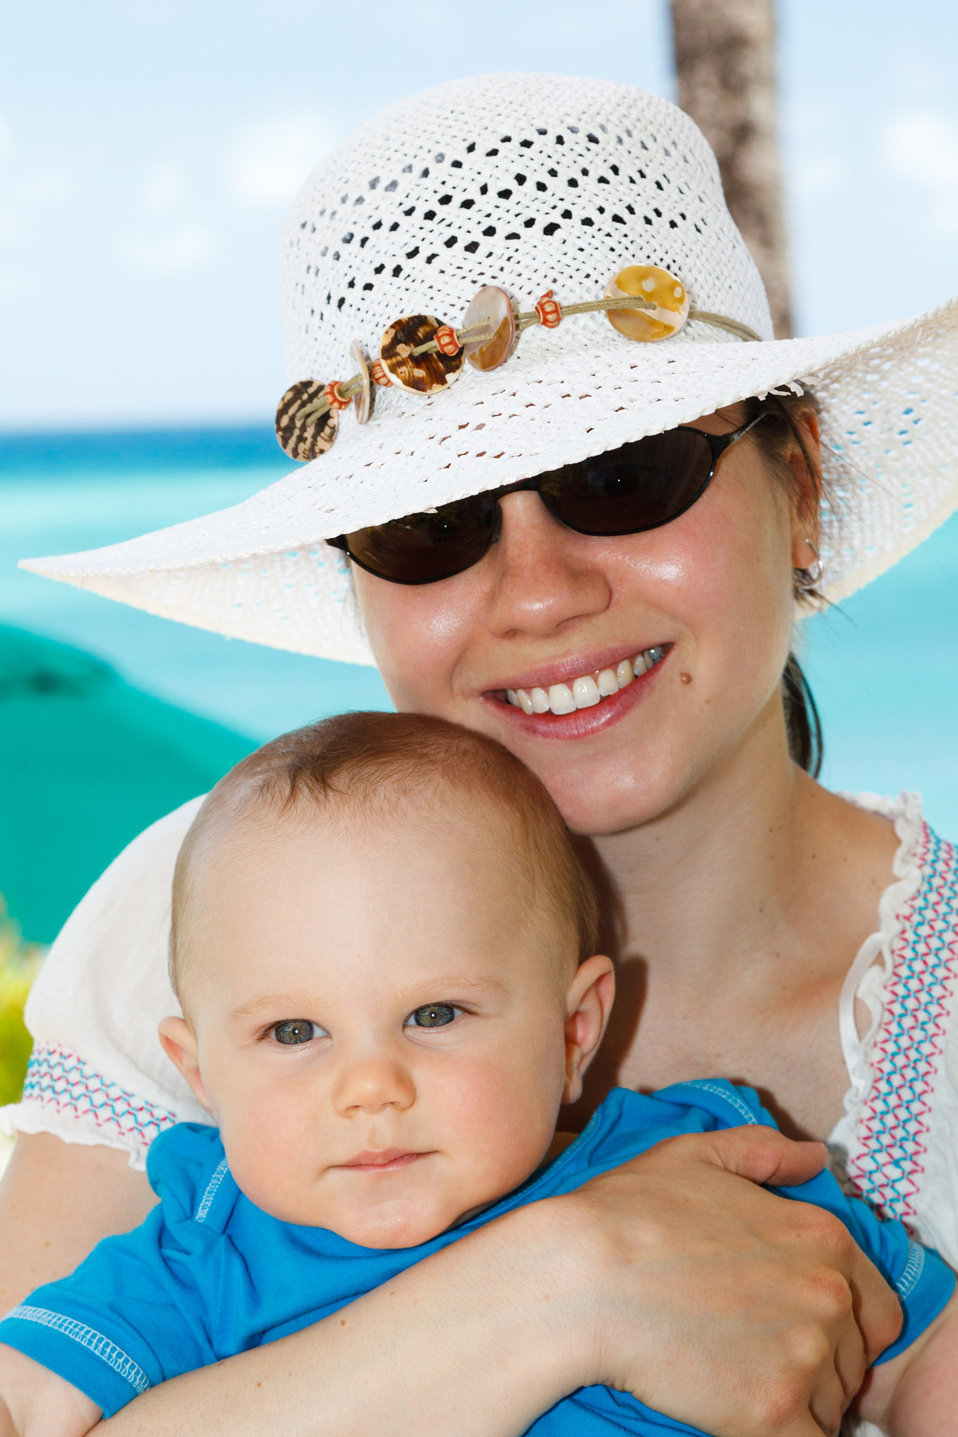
Mother and baby on summer holiday

Mom holding a baby on their summer holiday.